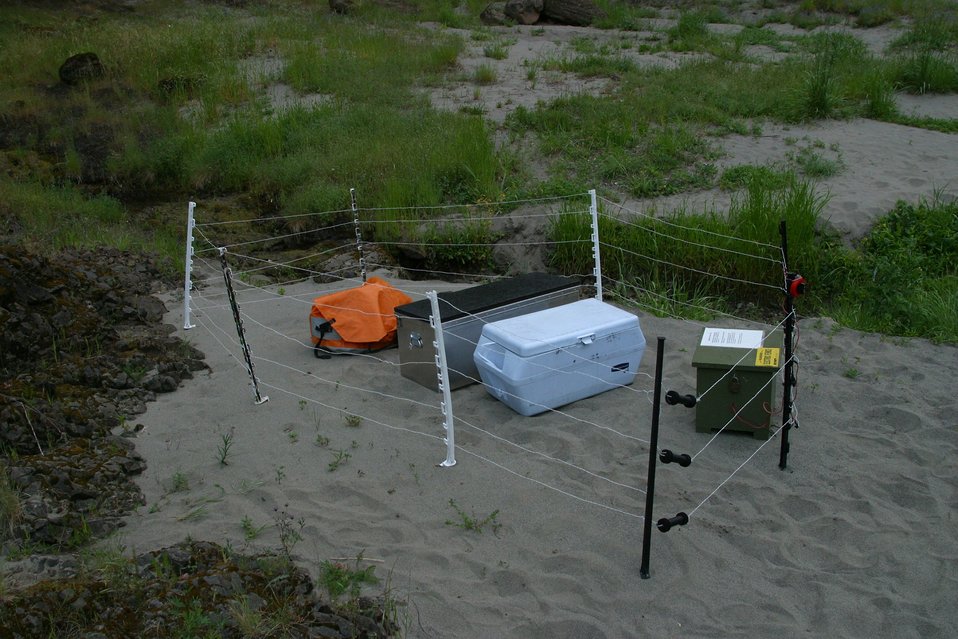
Wild section of the Rogue River from Grave Creek to Foster Bar May 19 to May 22.